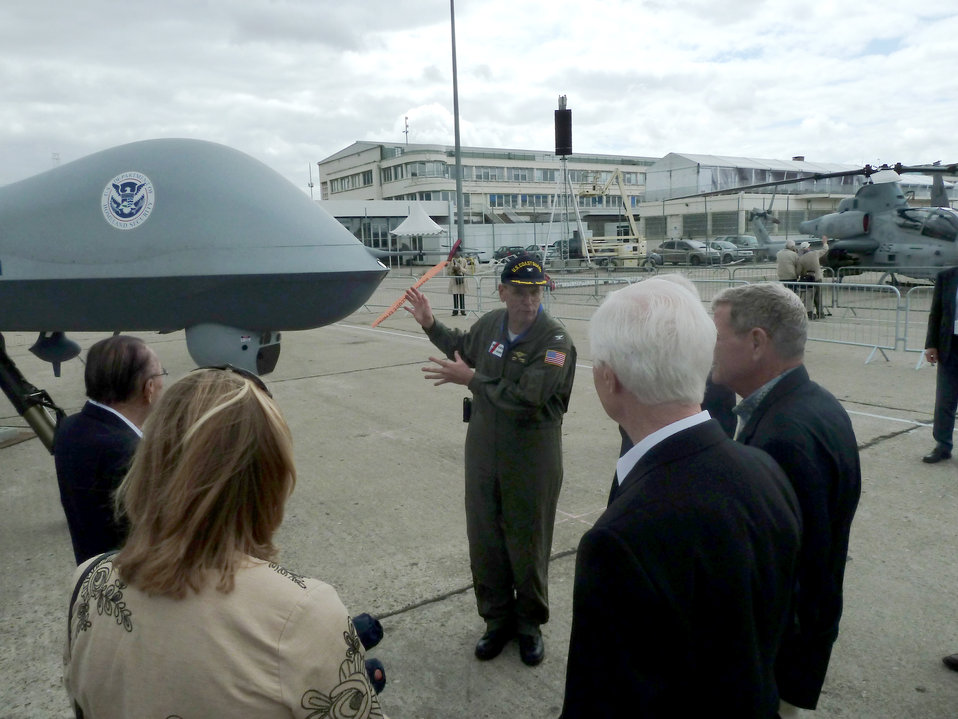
Paris Air Show

U.S. Coast Guard Capt. James Sommer explains the role of the MQ-9 Predator B (Guardian) unmanned aerial system to a Congressional delegation June 19, 2011, during the 49th International Paris Air Show at the Le Bourget Airport in Paris. The Predator B (Guardian) is operated by the U.S. Customs and Border Protection and the U.S. Coast Guard for the Department of Homeland Security.